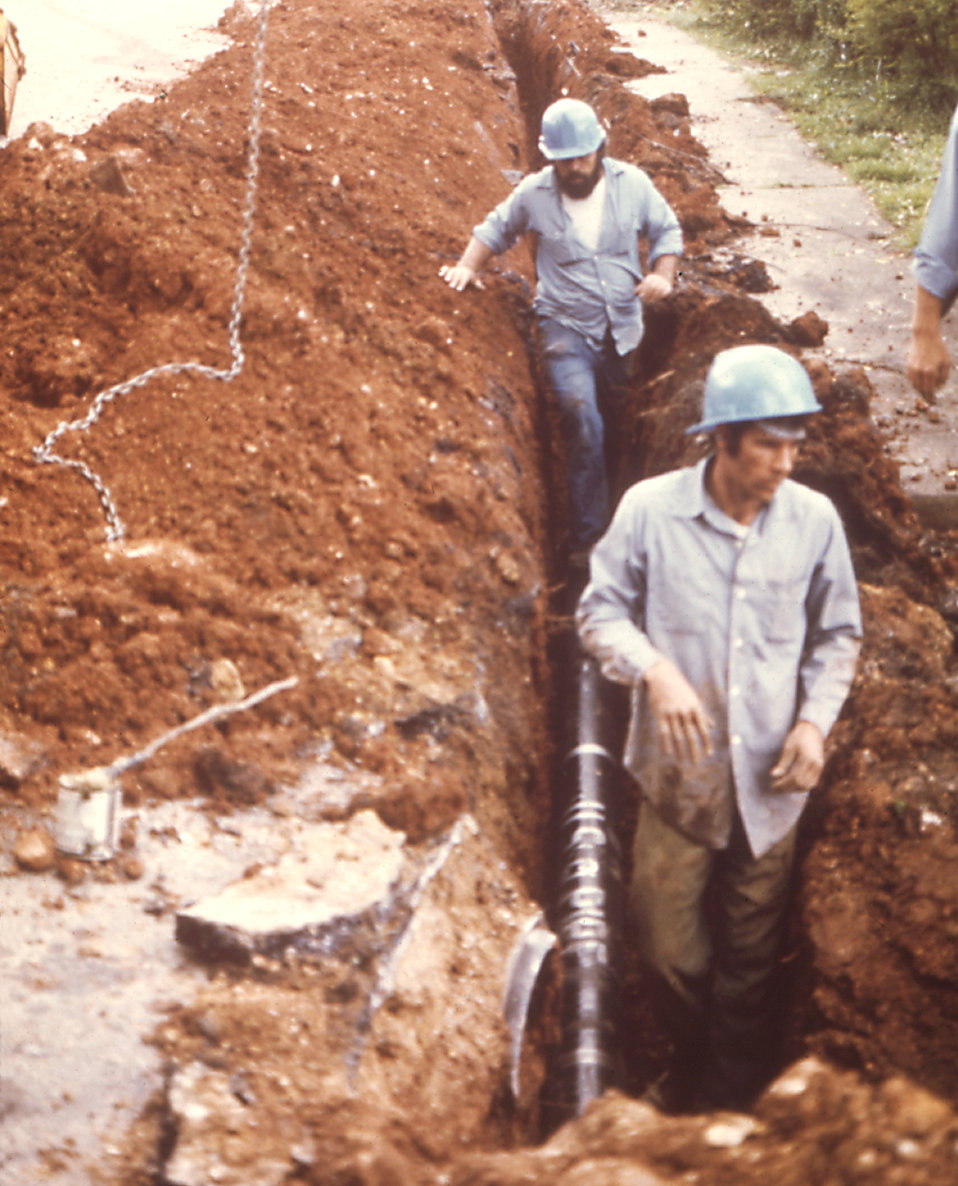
These workers were replacing a section of water pipes after a local chlordane contamination in a Chattanooga, TN, neighborhood.